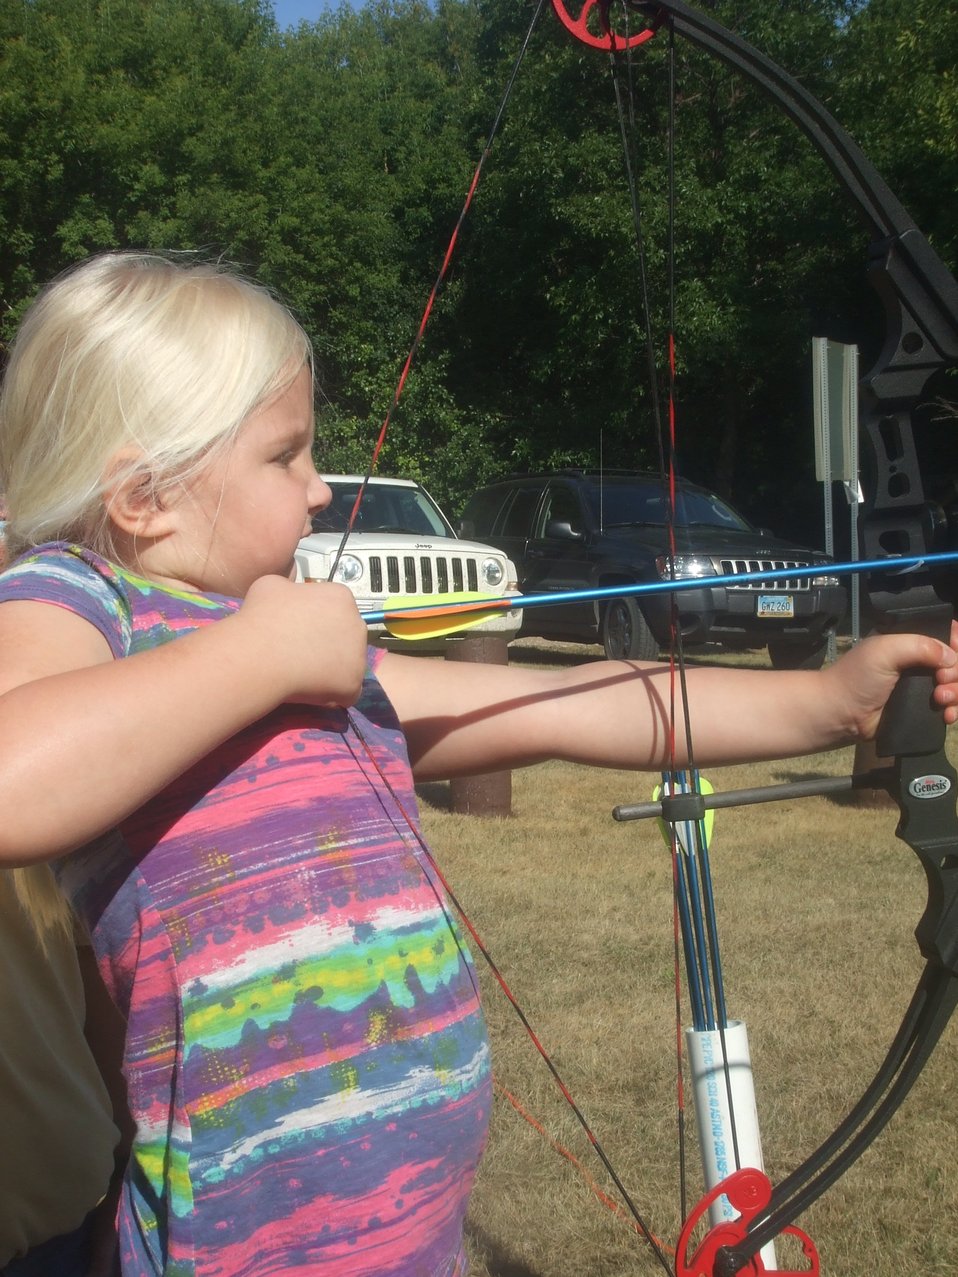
2011 Greenwing Day - Archery Session

Des Lacs National Wildlife Refuge, Tasker's Coulee

Look at that dedication!